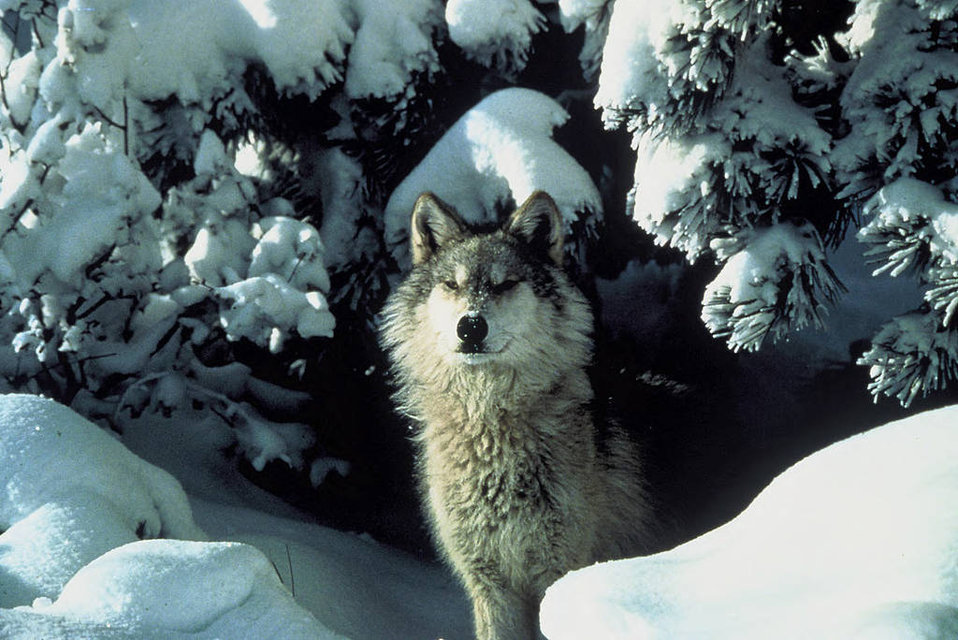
gray wolf